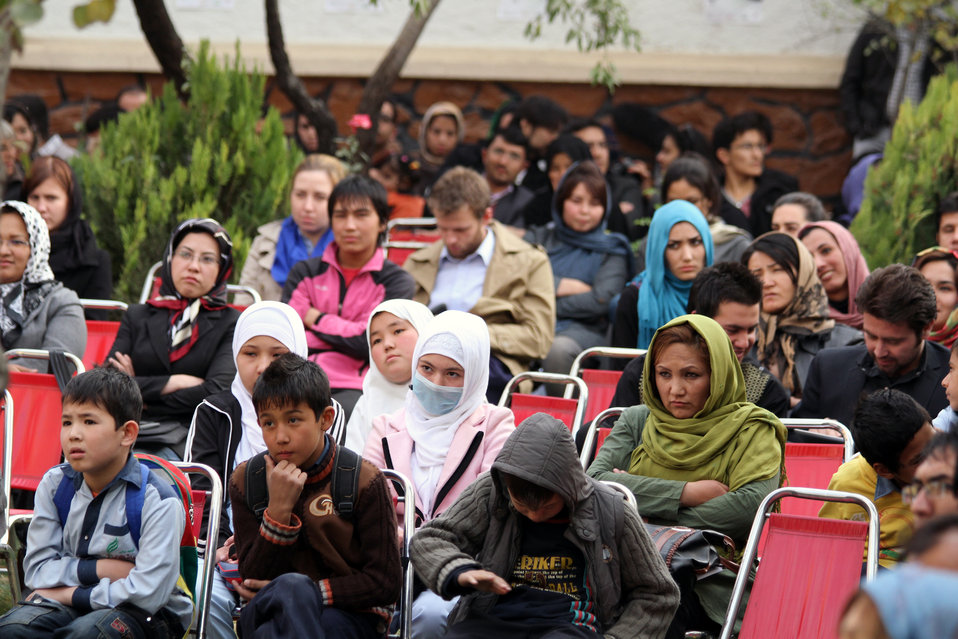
Afghan Youth Festival

Internews - USAID